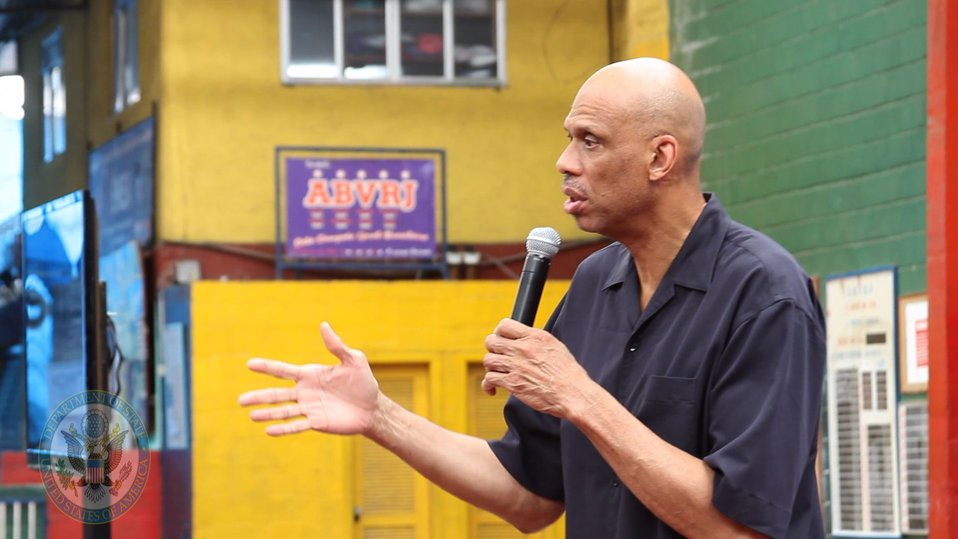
Global Cultural Ambassador Kareem Abdul-Jabbar Engages Youth

Hall-of-Famer and Global Cultural Ambassador for the U.S. Department of State Kareem Abdul-Jabbar discusses the importance of education, social and racial tolerance, cultural understanding, and using sports as a means of empowerment with youth in Rio de Janeiro, Brazil, on January 26, 2012.